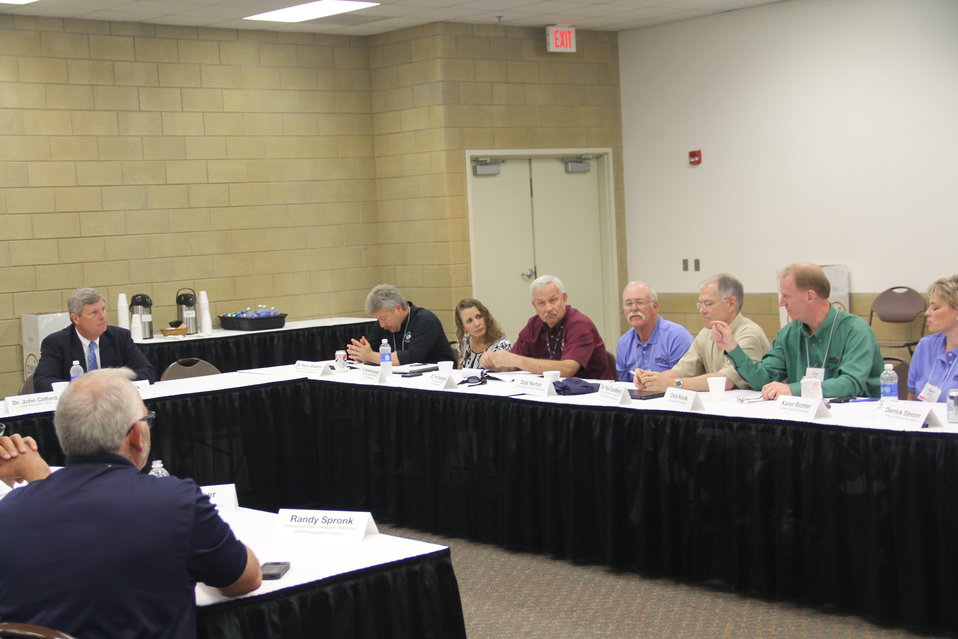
Agriculture Secretary Tom Vilsack meets with pork industry leaders at the 2014 World Pork Expo in Des Moines, IA on Jun. 5, 2014.